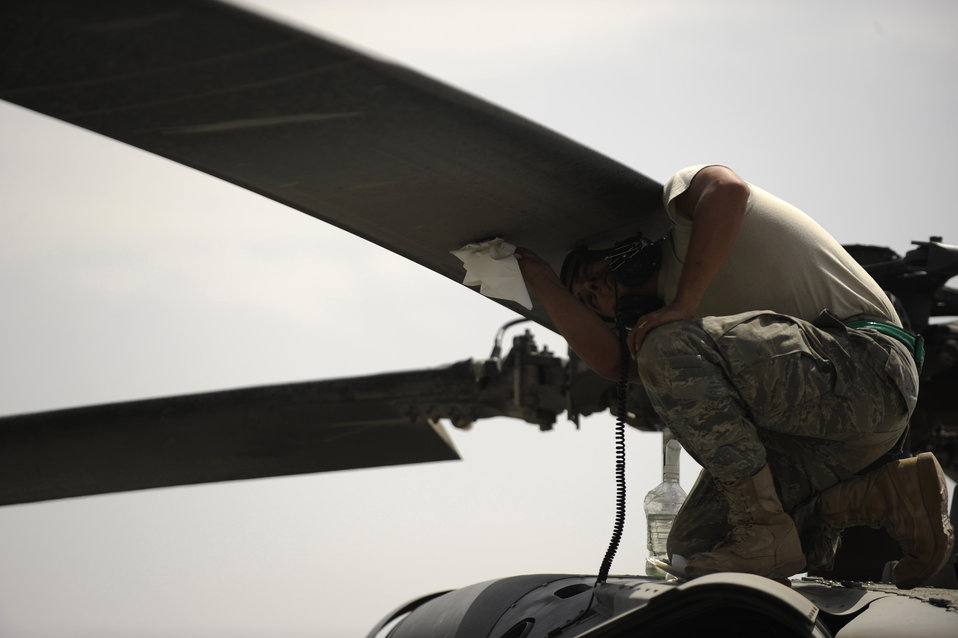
Maintenance Airmen ensure rescue missions save lives

Senior Airman Robert Fabela cleans the rotors of an HH-60 Pave Hawk after the aircrew returned from an alert mission April 16, 2010, at Camp Bastion, Afghanistan. Airman Fabela is a Pave Hawk crew chief assigned to the 451st Expeditionary Aircraft Maintenance Squadron helicopter maintenance unit.